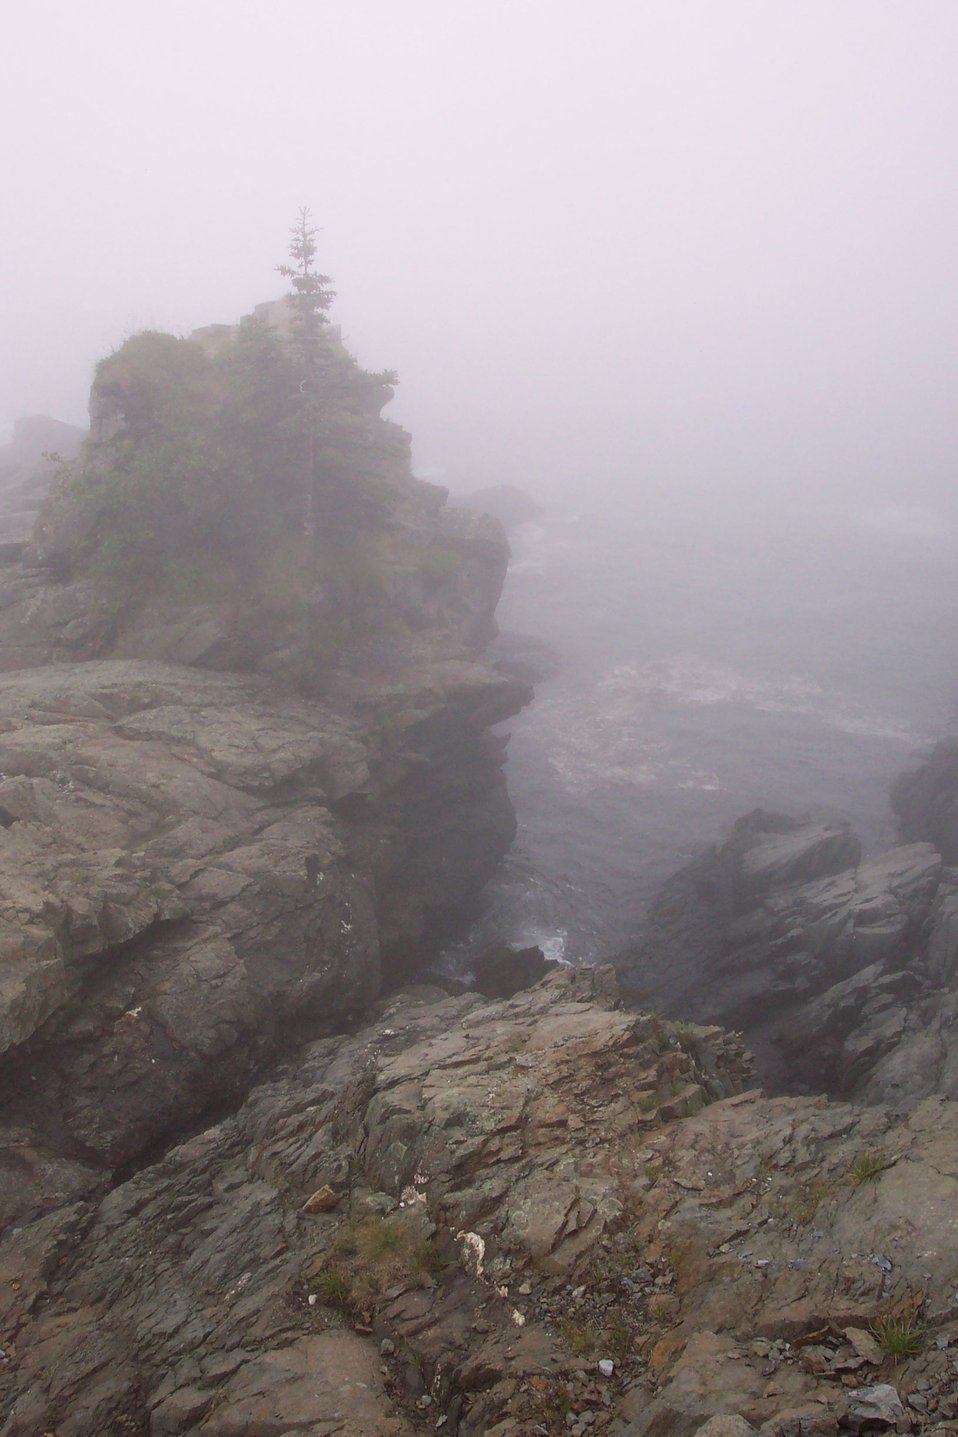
Probably the easternmost tree in the United States clinging to a precarious foothold at West Quoddy Head.